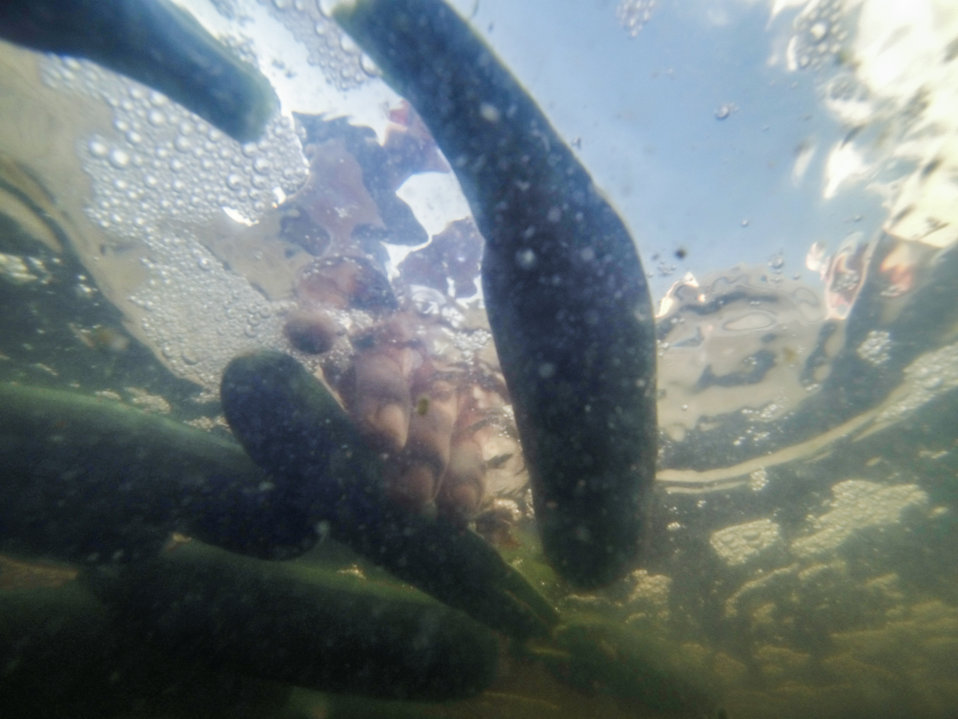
Migrant workers rinse away loose soil and bits of squash blossoms before packing the just-picked green zucchini squash, in Mechanicsville, VA on Friday, Sept. 20, 2013.